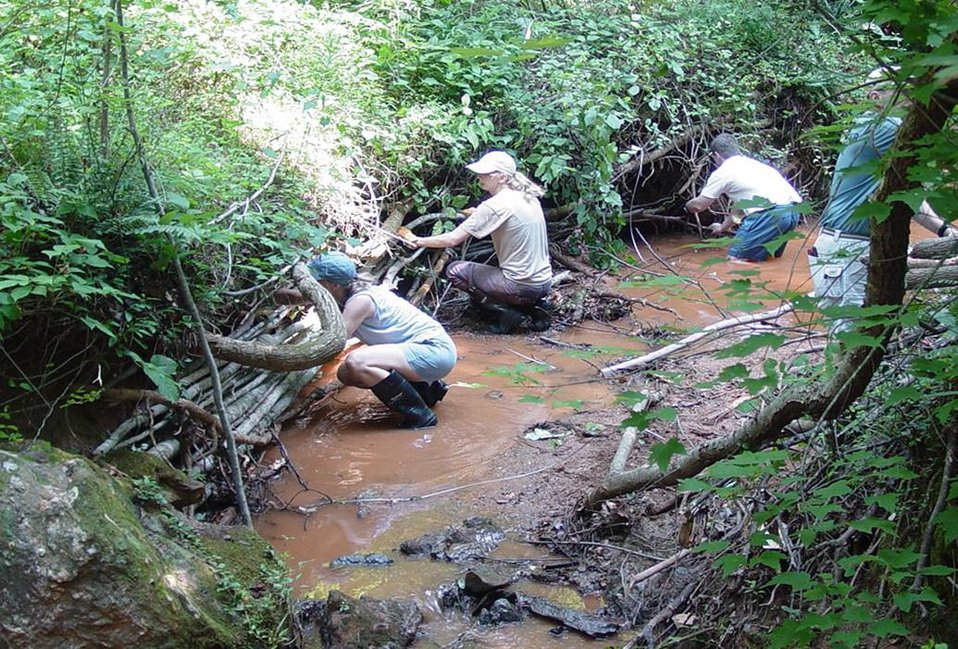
brush bundles

Uploaded for Flickr member crotwelltaylor.

Chapel Creek, Gainesville, GA
Volunteers install brush bundles to protect undercut banks on this 1st order stream.